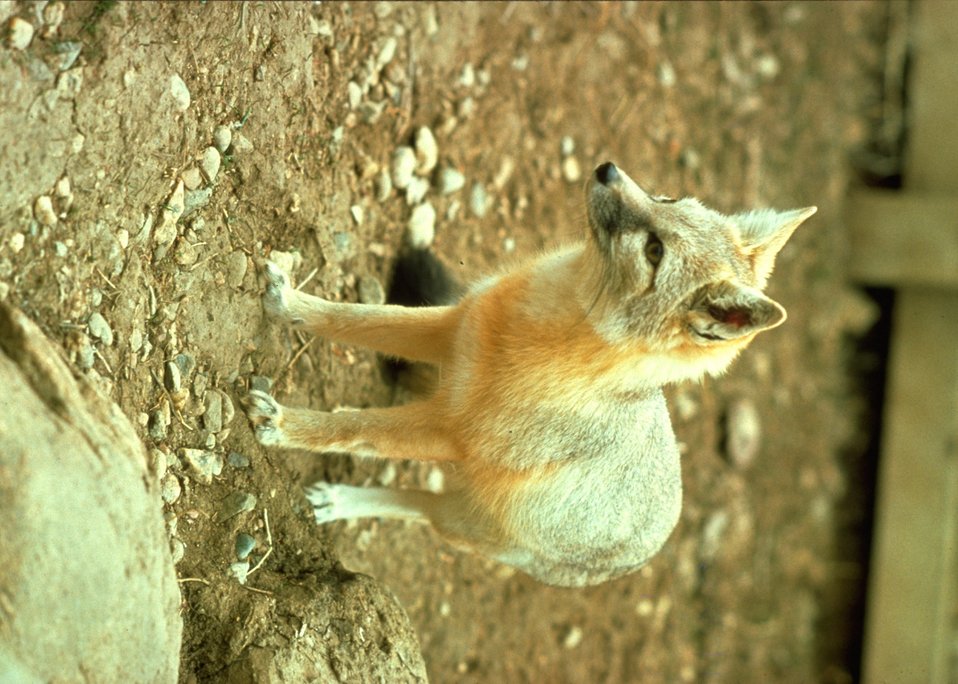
Gold fox.